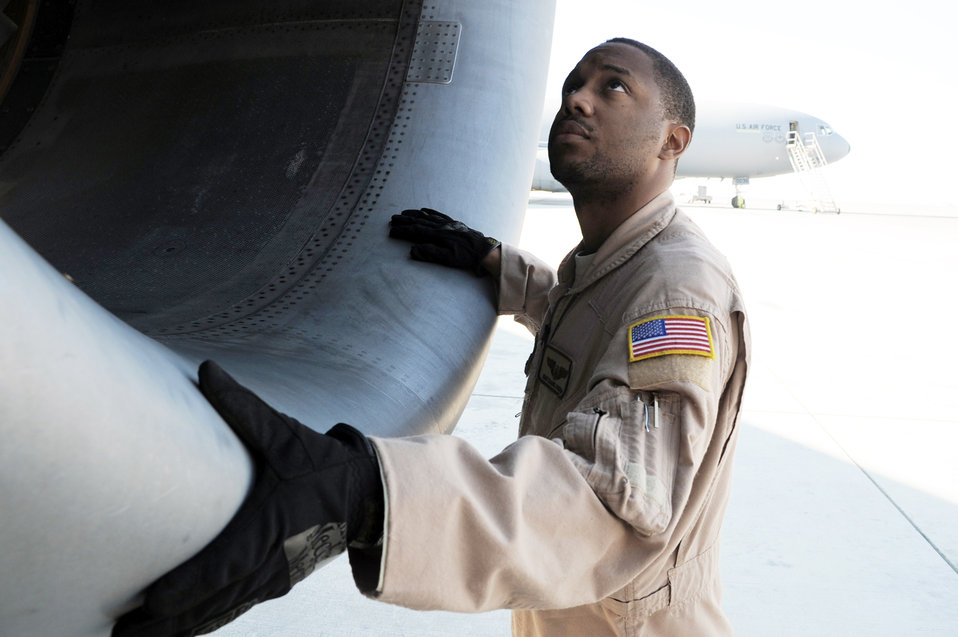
KC-10s keep aircraft flying in Southwest Asia

Staff Sgt. Kaamil Coston does an engine check Jan. 8, 2009, at an air base in Southwest Asia. Sergeant Coston is KC-10 flight engineer with the 908th Expeditionary Air Refueling Squadron, and deployed from the 2nd Air Refueling Squadron at McGuire Air Force Base, N.J.